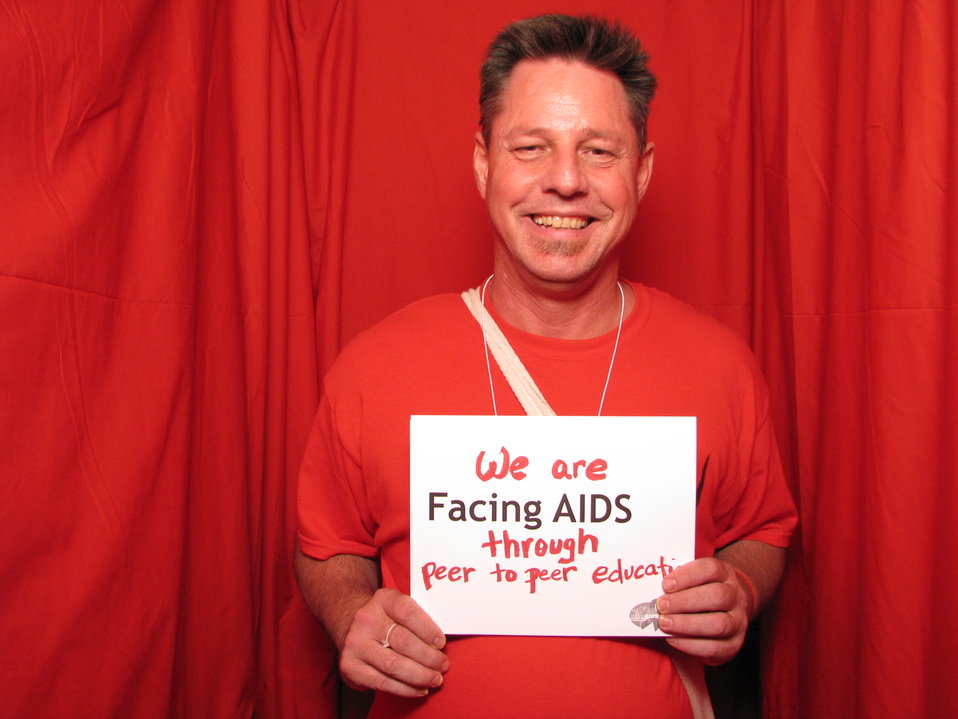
We are FACING AIDS through peer to peer education.

From the AIDS.gov photo booth at the U.S. Conference on AIDS, September 2010 (Orlando, FL).